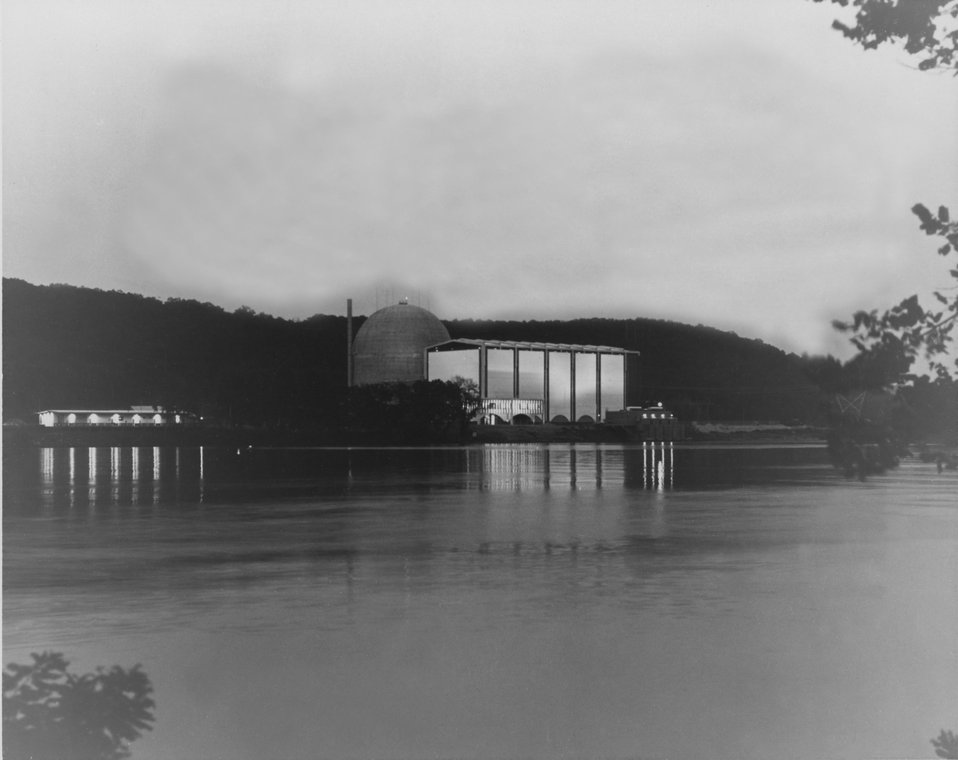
The Haddam Neck Nuclear Plant.